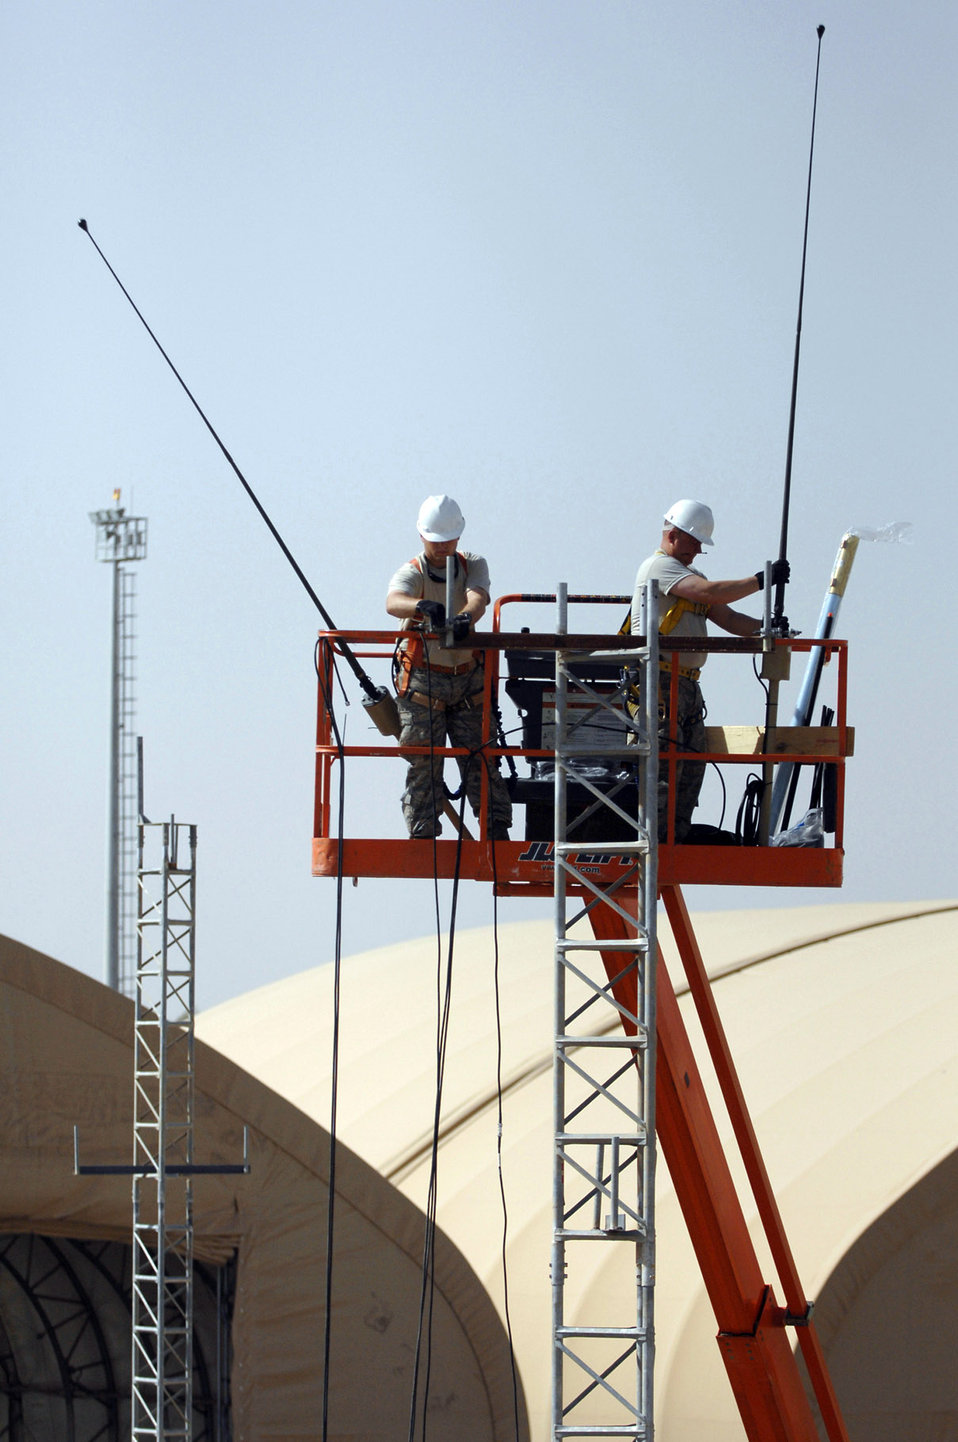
Radio up

Senior Airman Paul Martin and Tech. Sgt. Robert Fisher install high-frequency radio antennas which will be used for future ground-to-air tactical radio communications and provide more land mobile radio capabilities for ground operations June 21 at Joint Base Balad, Iraq. The Airmen are 332nd Expeditionary Communications Squadron ground radio maintainers. Airman Martin is deployed from Yokota Air Base, Japan, and Sergeant Fisher is deployed from Youngstown Air Reserve Base, Ohio.